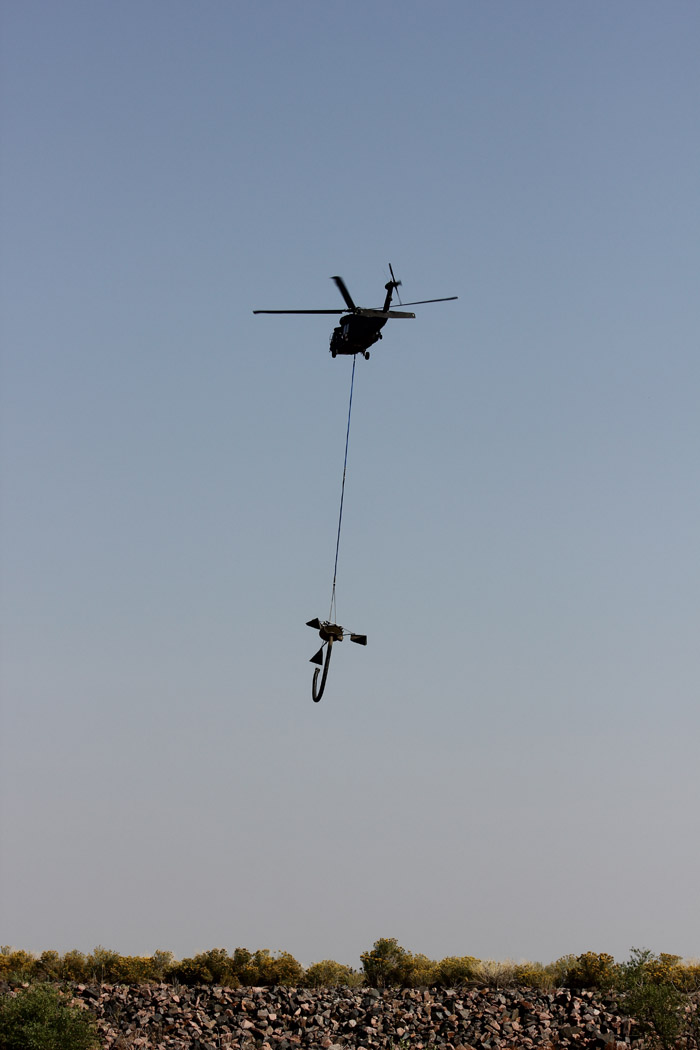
Air Force Helps USFWS with Equipment Move

Personnel from the 460th Space Wing, Air Force Space Command at Buckley Air Force base conducted a recent training mission to help the Service remove a solar aerator from Williams Lake.

The lake may be drained in the near future due to bird air strike concerns on the base so the aerator will be loaned to Warren Air Force base for the near future. This effort by the 460th Space Wing saved the U.S. Fish and Wildlife Service considerable time and effort in removing this heavy equipment.